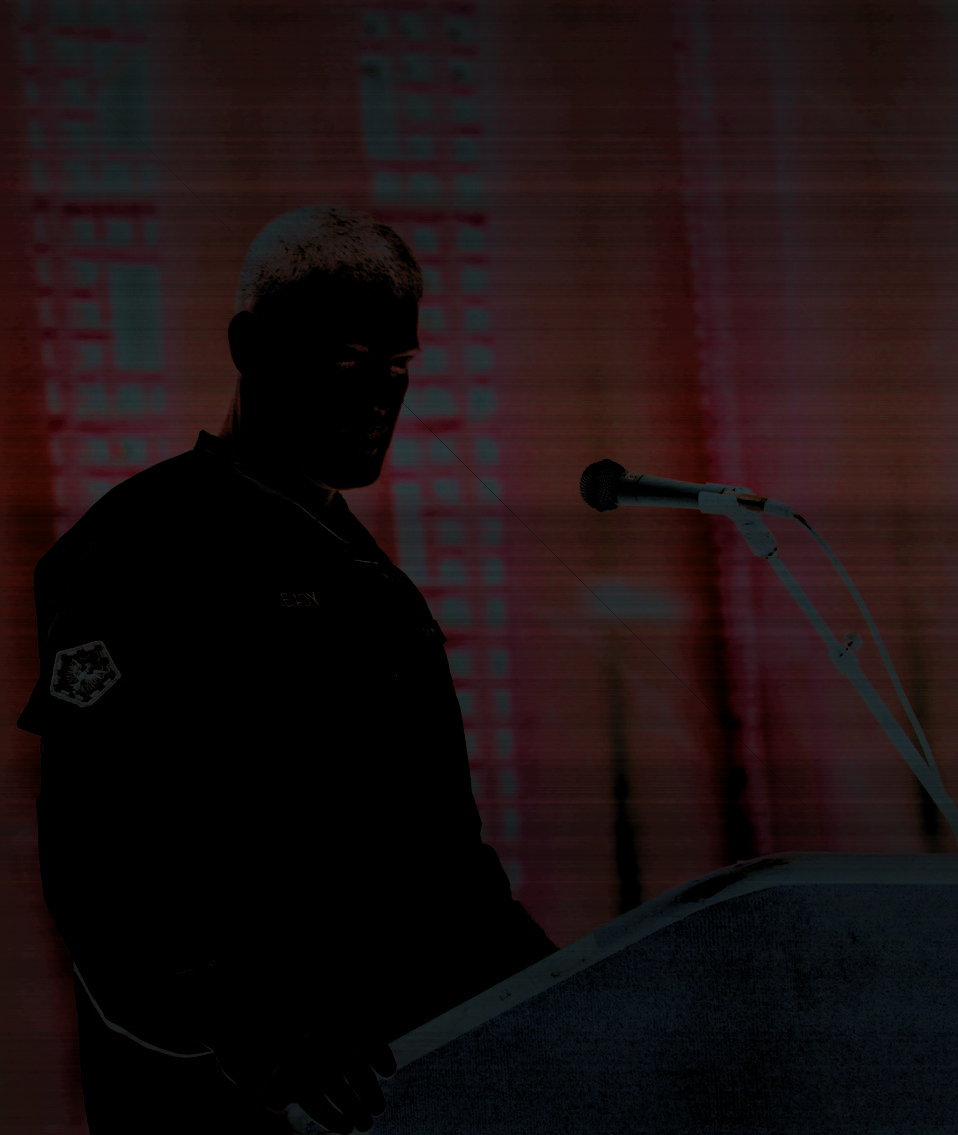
New Commander speaks to audience

Col. William J. Leady addresses the crowd during his change of command ceremony at the Sacramento Memorial Auditorium in Sacramento, Calif., July 27. Leady took command of the U.S. Army Corps of Engineers Sacramento District during the ceremony.